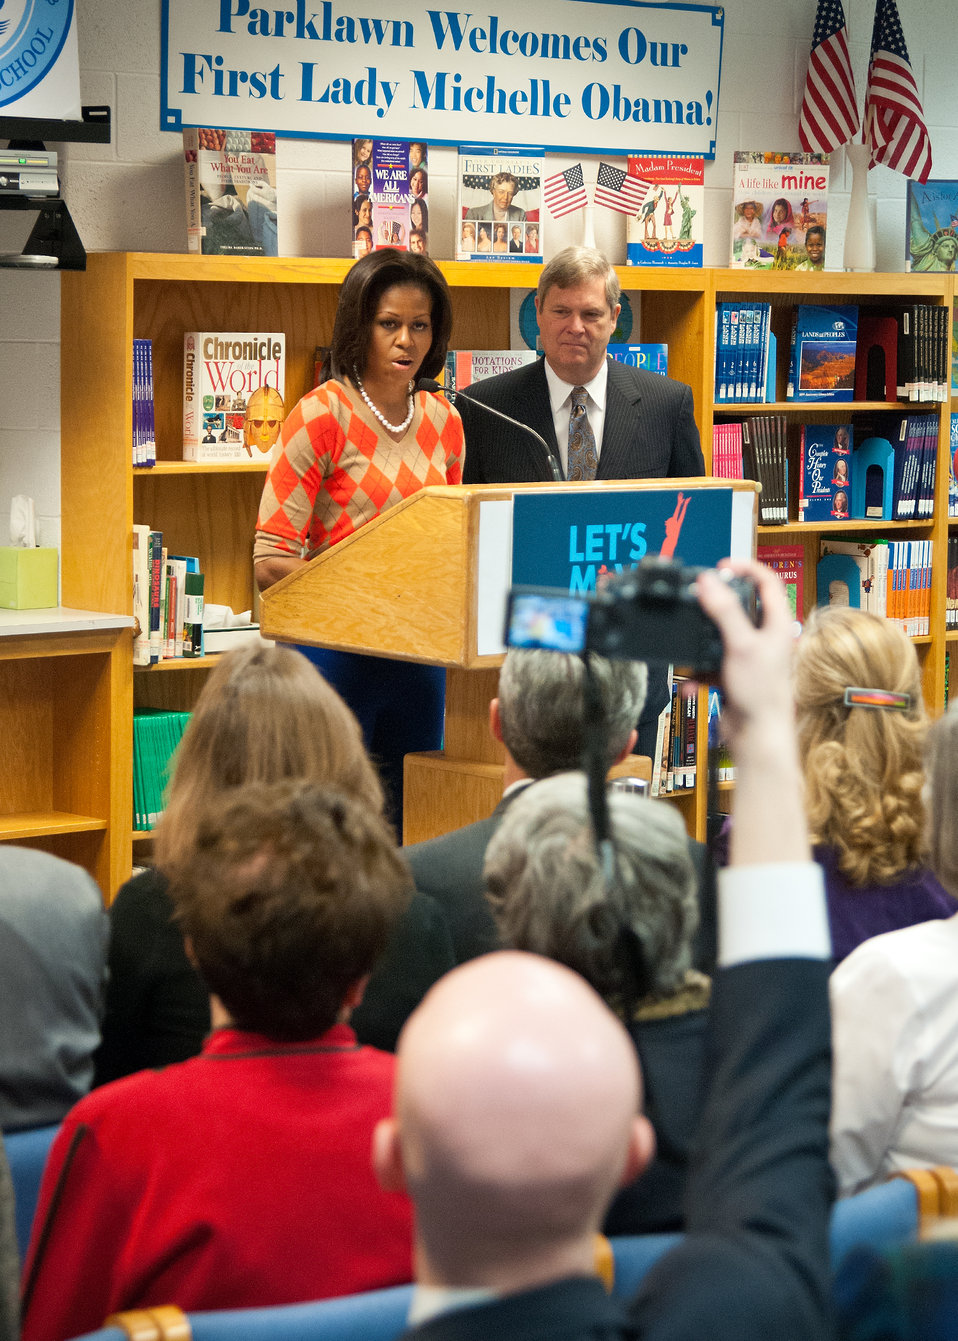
First Lady Michelle Obama joined Agriculture Secretary Tom Vilsack at Parklawn Elementary School to speak with faculty and parents about the United States Department of Agriculture’s new and improved nutrition standards for school lunches. An important accomplishment of the Healthy, Hunger-Free Kids Act that President Obama signed into law last year, USDA is making the first major changes in school meals in over 15 years. The new standards encourage fruits and vegetables every day of the week, increasing offerings of whole grain-rich foods, offering only fat-free or low-fat milk and making sure kids are getting proper portion sizes at the Parklawn Elementary School Alexandria, Virginia, on Wednesday, January 25, 2012.